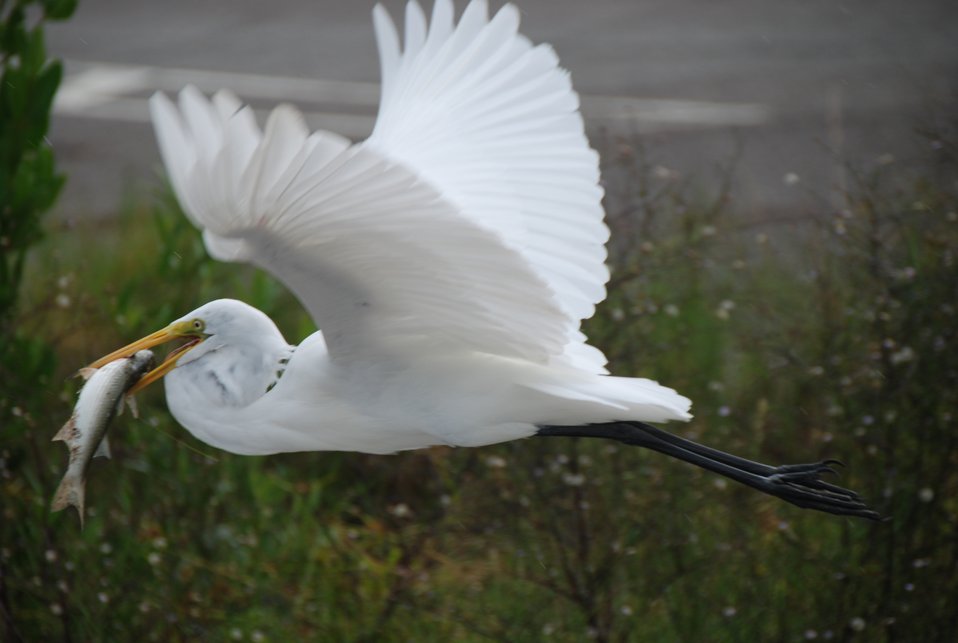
Merritt Island 1

An Egret at Merritt Island. Supported by the North American Wetlands Conservation Act.